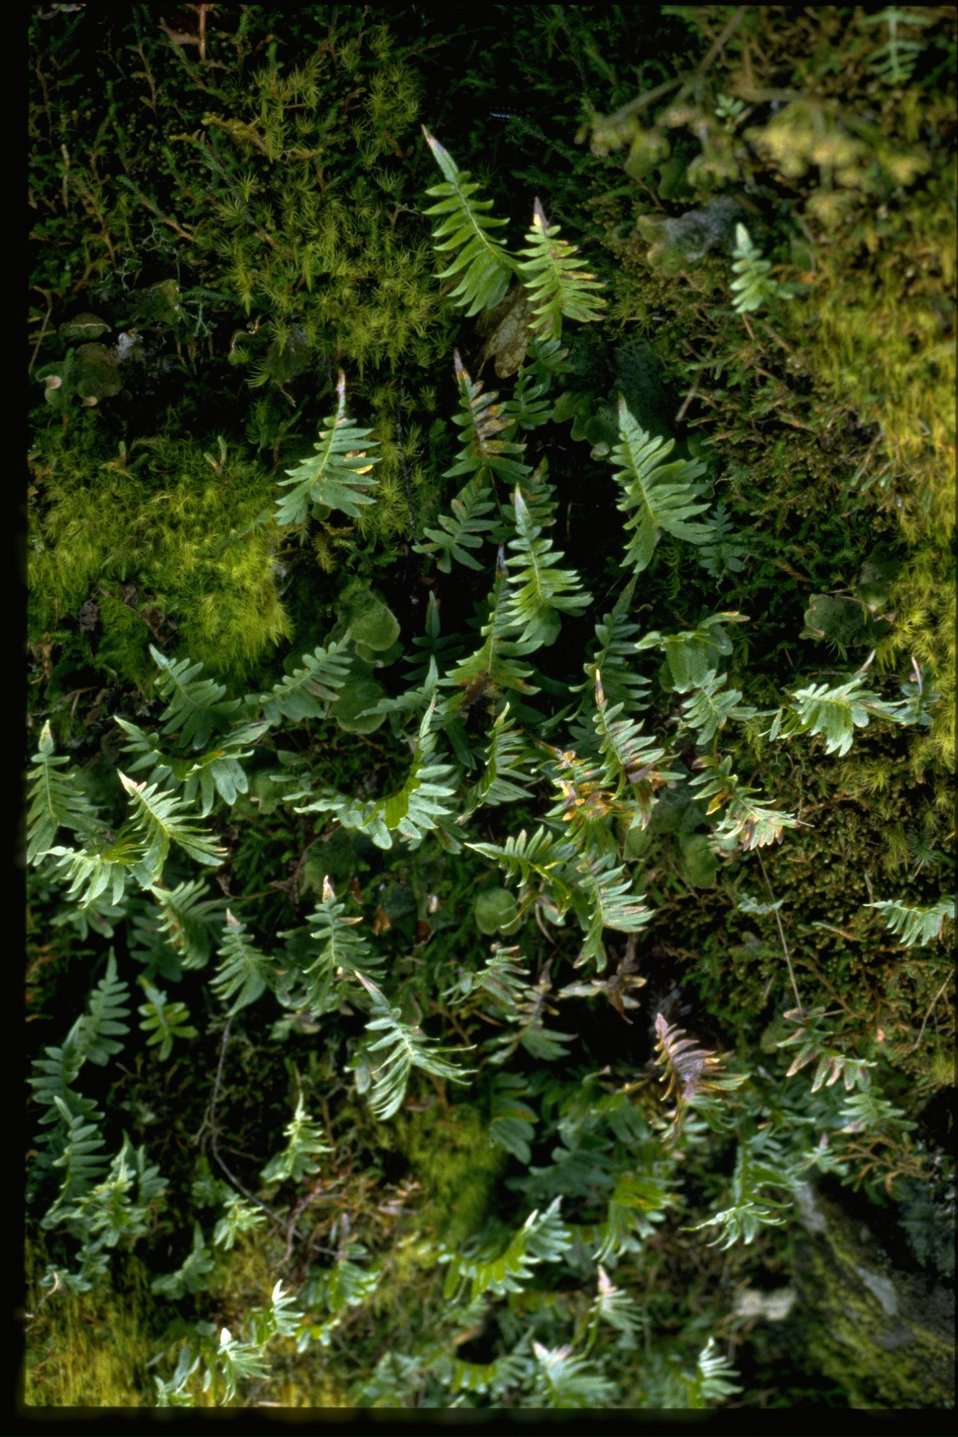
Polypodium glycyrrhiza.